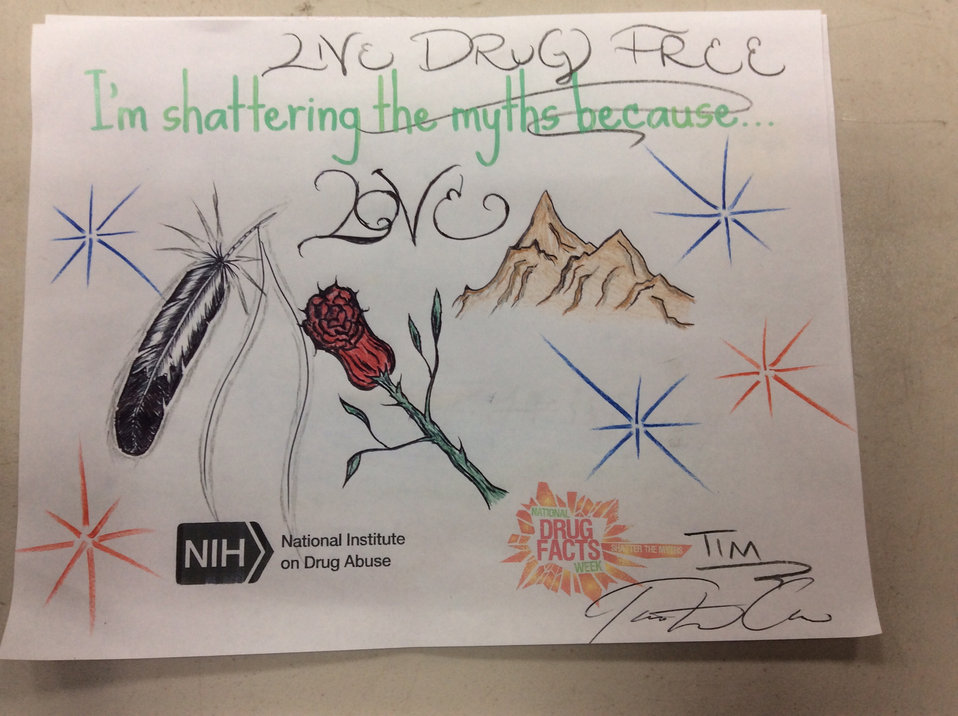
Friendship House San Francisco